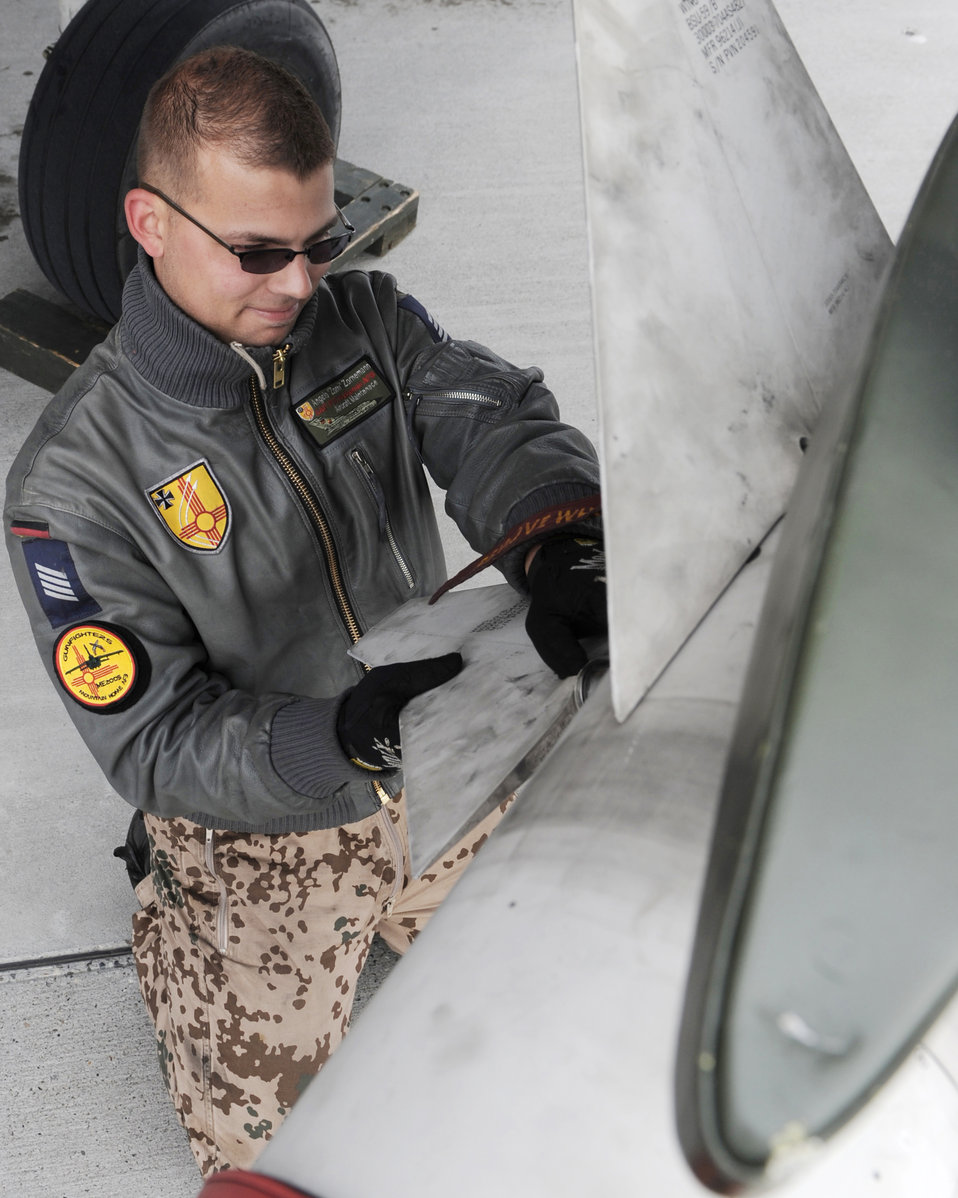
Exercise Mountain Roundup

Senior Airman Angelo Zornemann, a maintenance journeyman from the German air force Flying and Training Center at Holloman Air Force Base, N.M., attaches a fin to an AIM-9 sidewinder missile Oct. 21, 2009, during the Mountain Roundup exercise at Mountain Home AFB, Idaho. Mountain Roundup is a large-force exercise running from Oct. 15 through Oct. 30 and includes participants from the German air force, U.S. Air Force, U.S. Navy and U.S. Marines.